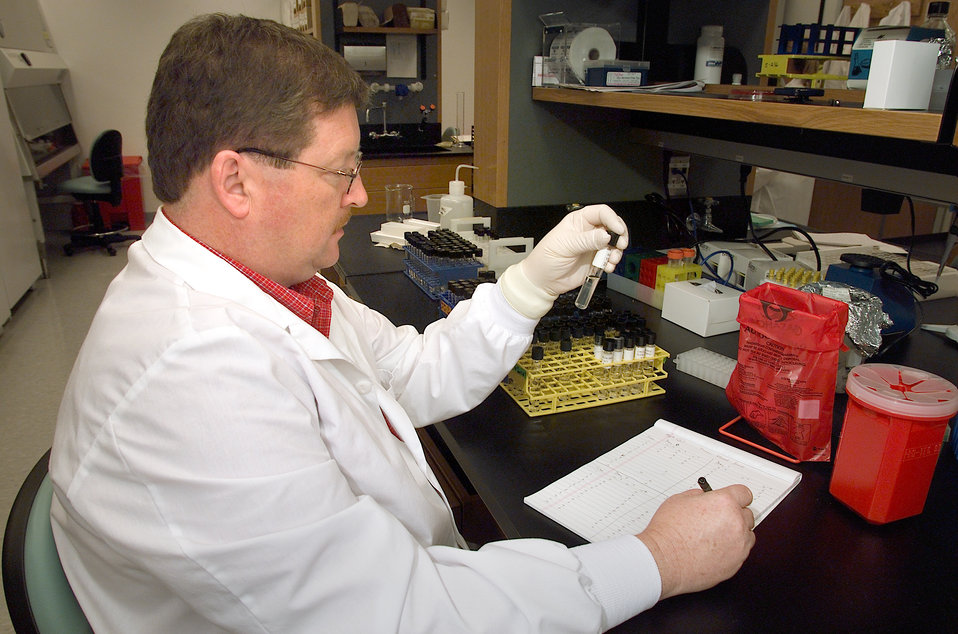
Paul Levett, Ph.D., of the Centers for Disease Control's Meningitis and Special Pathogens Branch (MSPB), in the National Center for Infectious Diseases (NCID), was shown performing a test tube analysis, looking for indications of bacterial growth during a 2005 laboratory test.